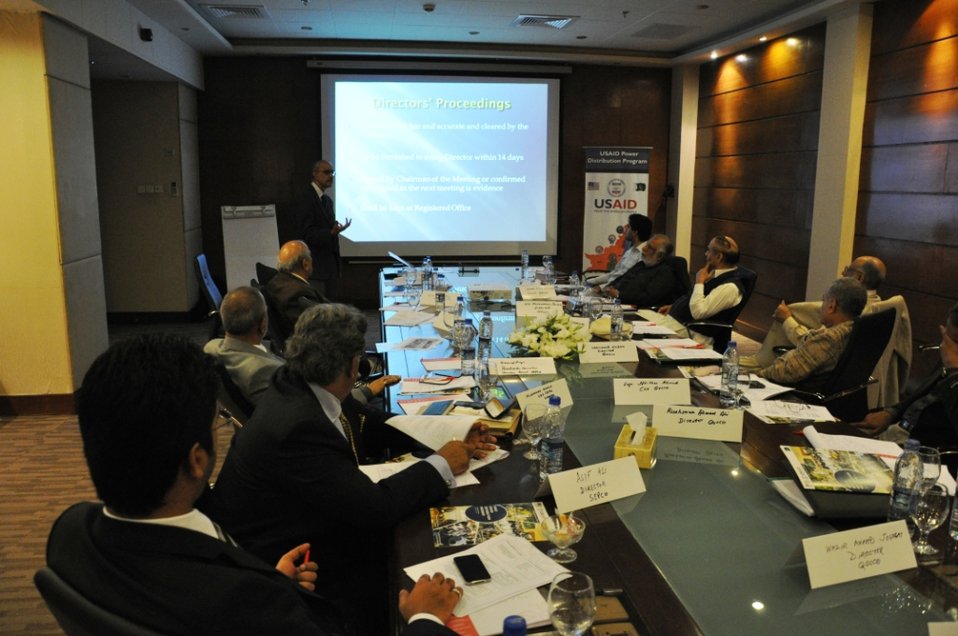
10 Jan BoD Training at Marriott

Chairmen Board of Directors of DISCOs met with the Joint Secretary Ministry of Water and Power and Mr. Robert Kolling, Advisor to the Ministry of Water and Power to discuss Board policies and procedures.